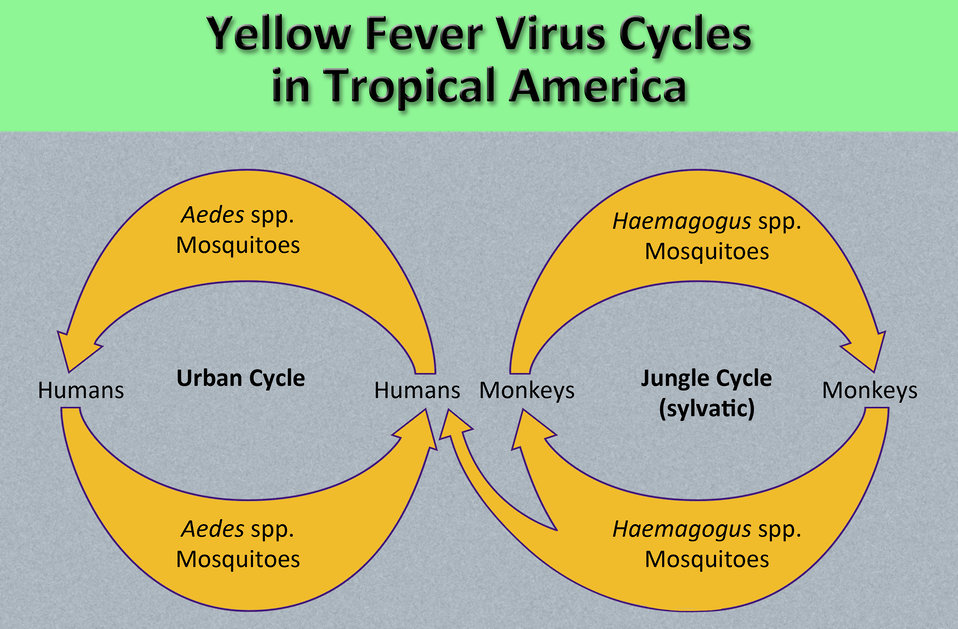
This diagram illustrates the methods by which the arbovirus, yellow fever is transmitted to humans and non-human primate hosts by Aedes spp. mosquitoes, in the case of human transmission, and Haemagogus spp. mosquitoes, in the case of both non-human primates and humans.